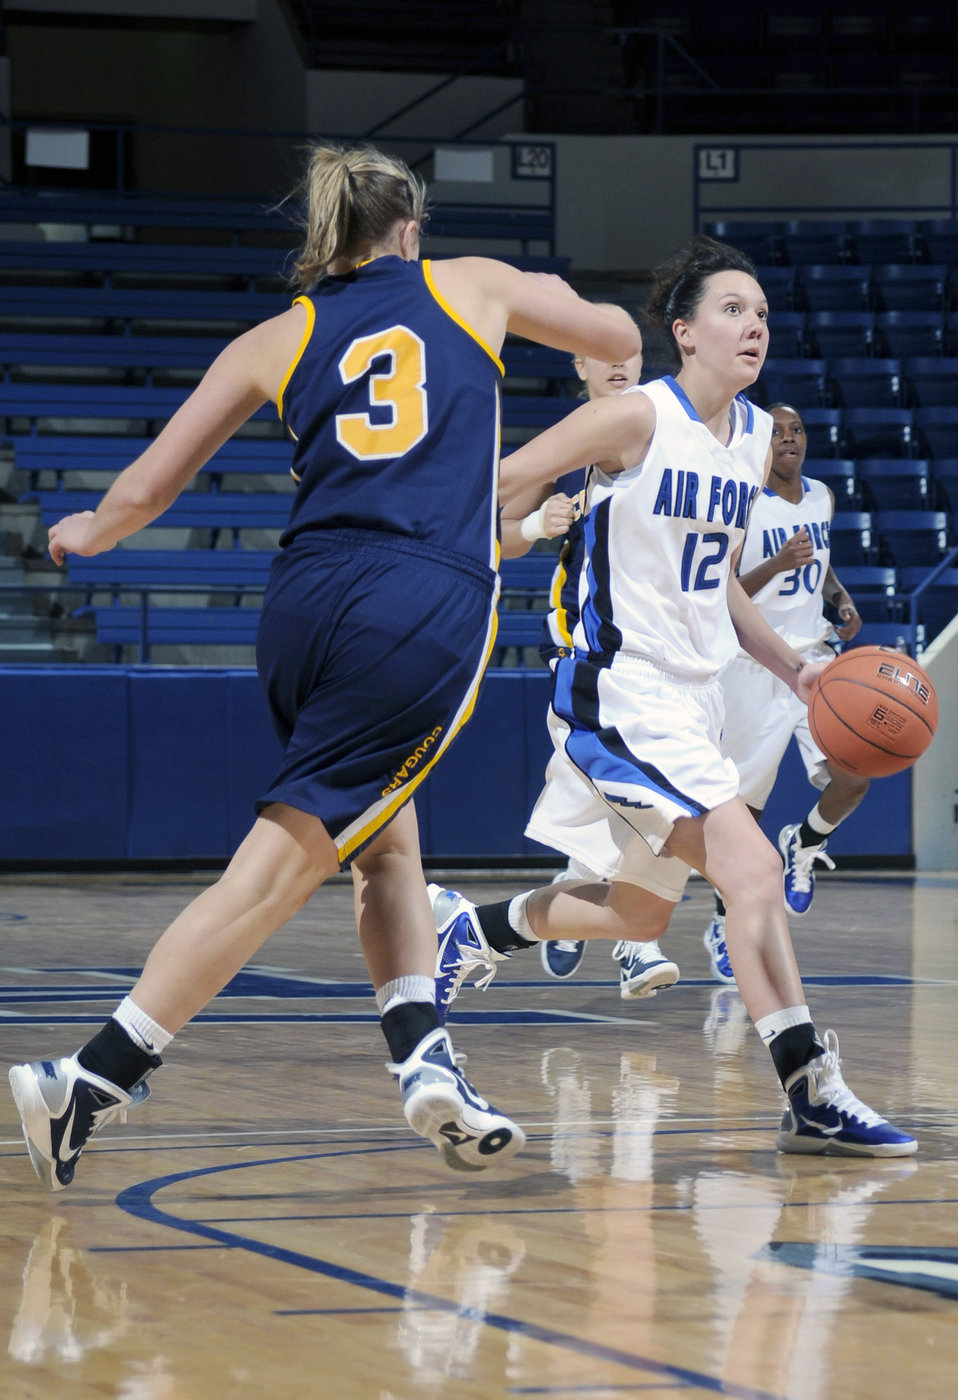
Women's basketball team defeats CCU Lady Cougars

Falcon sophomore guard Megan Muniz drives towards the basket as the Falcons defeated Colorado Christian University 68-58 Nov 28, 2010, at Air Force Academy's Clune Arena in Colorado Springs, Colo.